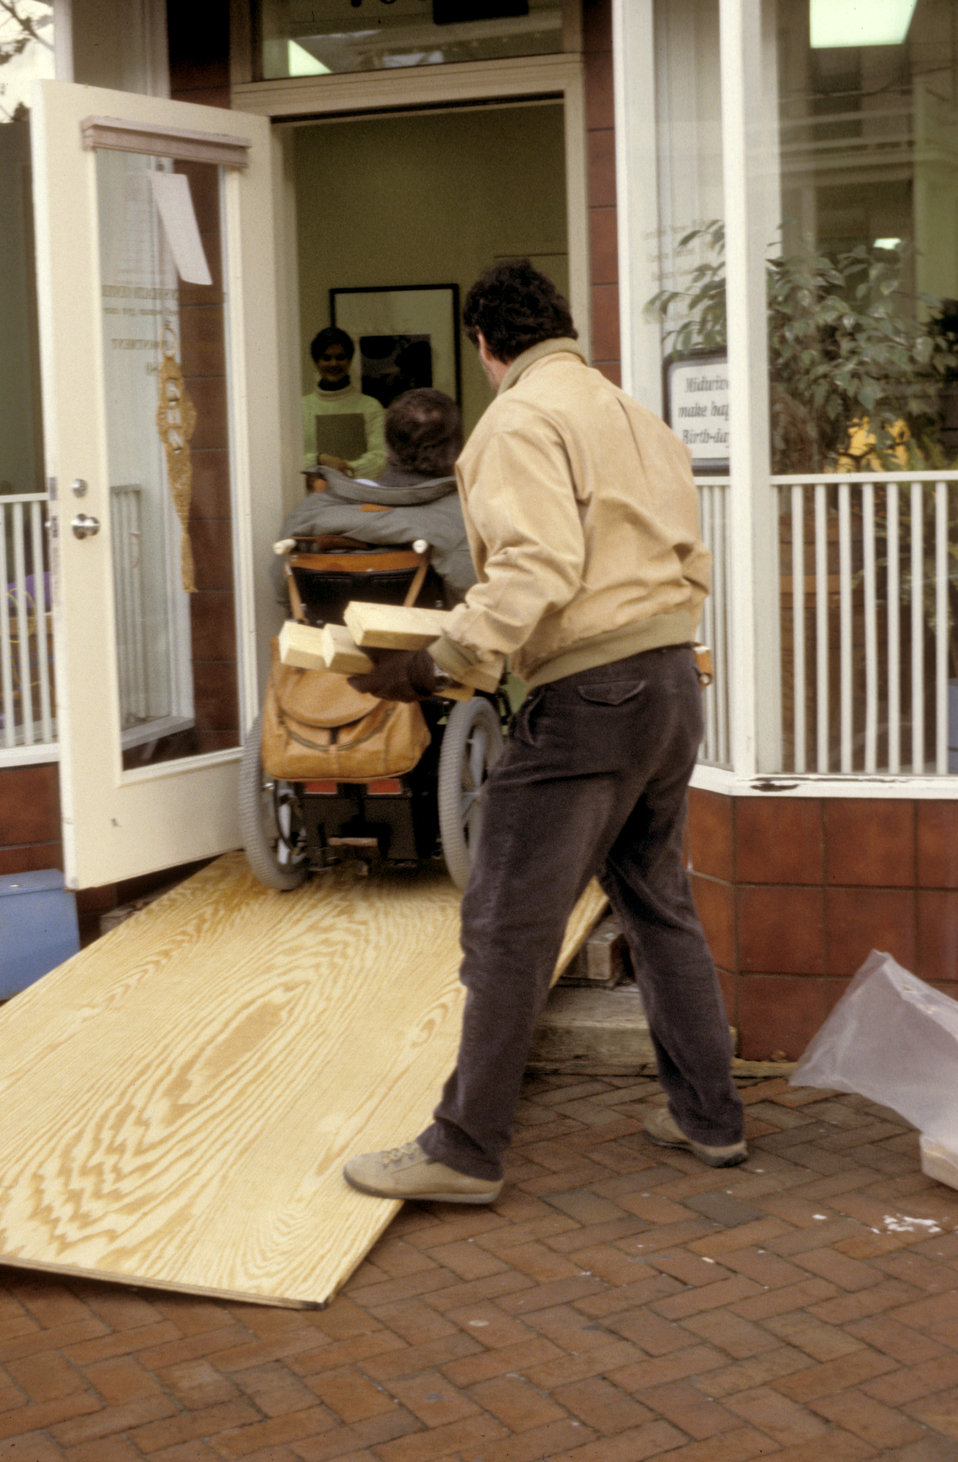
In this 1993 image, the front of a women's clinic revealed a front door that was accessed via a two-step stoop, which made accessibility an issue for individuals having problems with mobility, therefore, prompting the installation of a temporary plywood ramp depicted here. Though the temporary ramp made access easier for the mobility-challenged, it was constructed in such a way as to make it a dangerous, though short-term solution (see PHIL 9022, and 9024 - 9026). PHIL images 9027 - 9029 depicted a long-term, permanent solution using a brick, concrete, and metal ramp. It was not the perfect solution, for it lacked adequate maneuvering room near the clinic doorway. It also clearly appeared as an add-on, or after-the-fact solution that protruded into the wide sidewalk, while attempting to blend in with the existing buildings by using brick, colored concrete, and wrought iron rails. Stairs had also been provided.